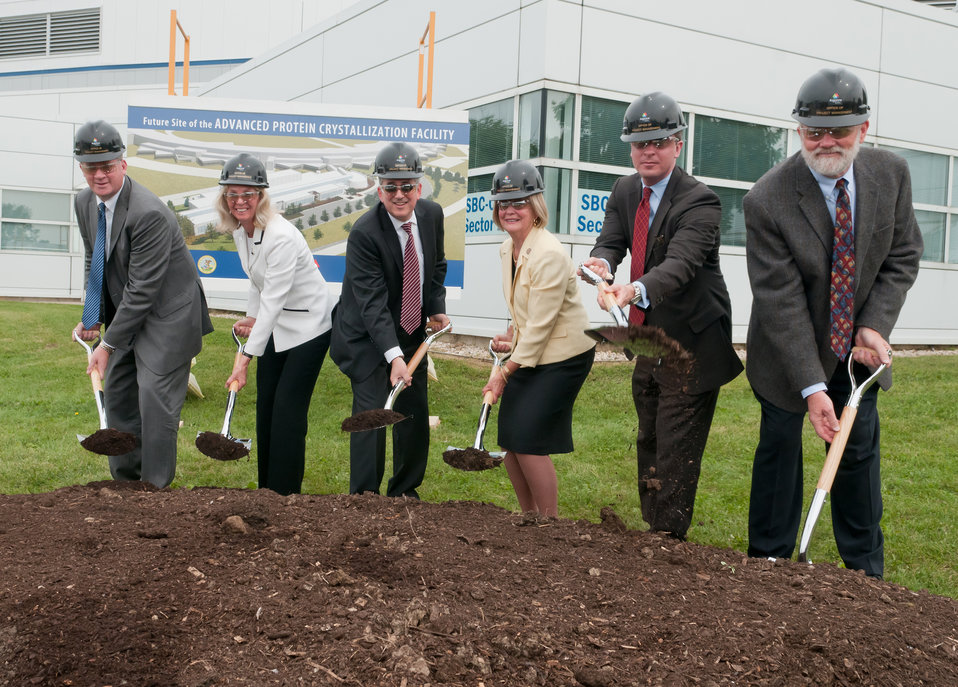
Groundbreaking for the Advanced Protein Crystallization Facility at Argonne National Laboratory.
The facility will enable scientists from Illinois and around the world to produce, purify and characterize a wide range of proteins more rapidly and have a critical role in the development of important medical therapeutics.